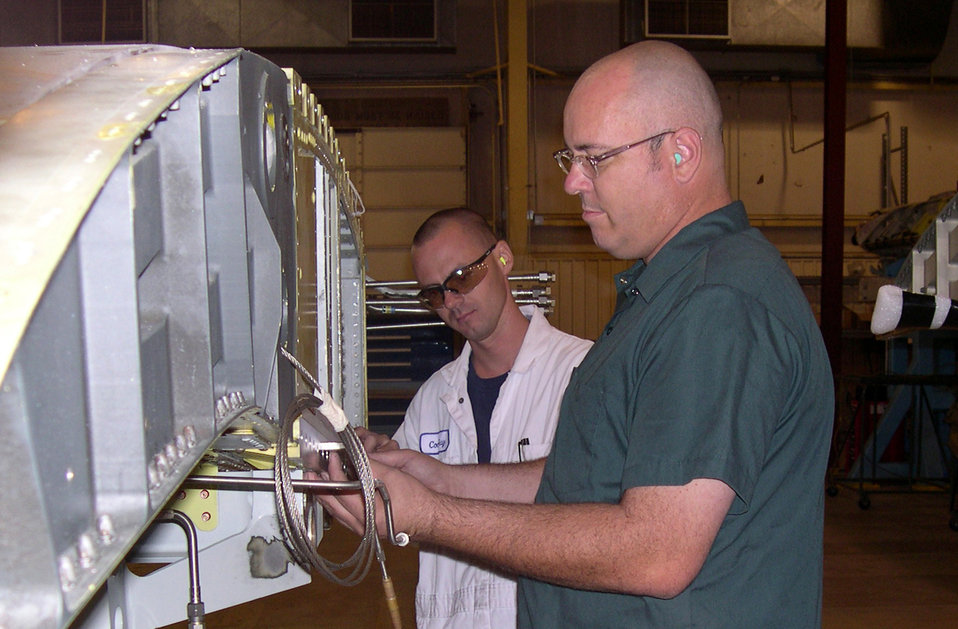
Thunderbolt upgrades

DAVIS-MONTHAN AIR FORCE BASE, Ariz. -- Mark Perrodin (foreground) and Chris Duggie mount a template to an A-10 Thunderbolt II center wing assembly as part of A-10 service-life extension work. Both men are aircraft structural technicians with the Aerospace Maintenance and Regeneration Center here.